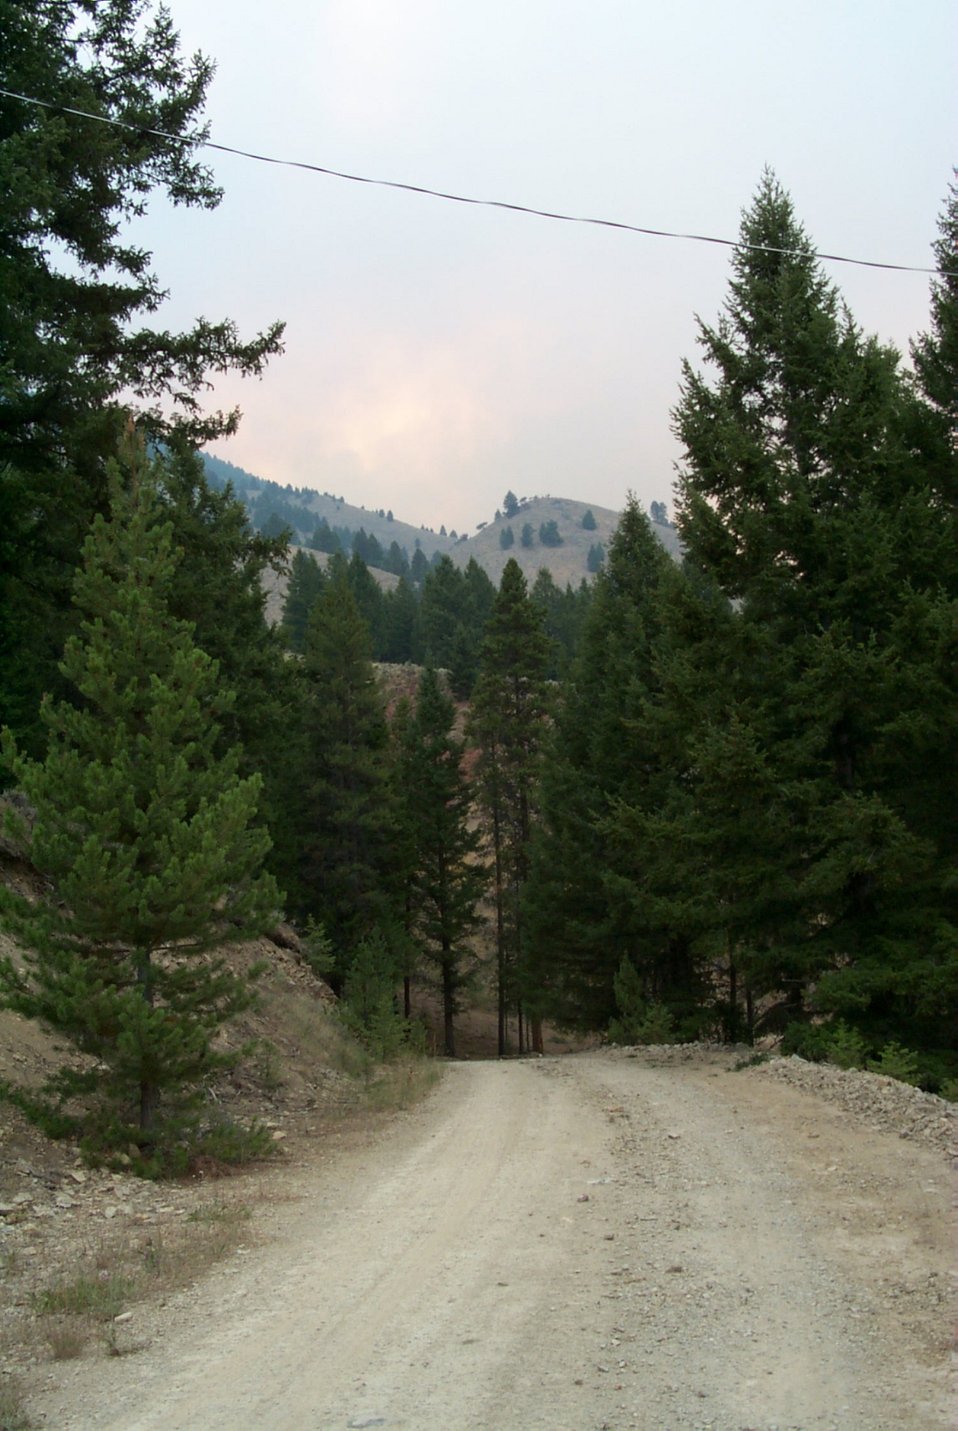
Fire Clearwater Fire Salmon Field Office USRD Upper Snake River District